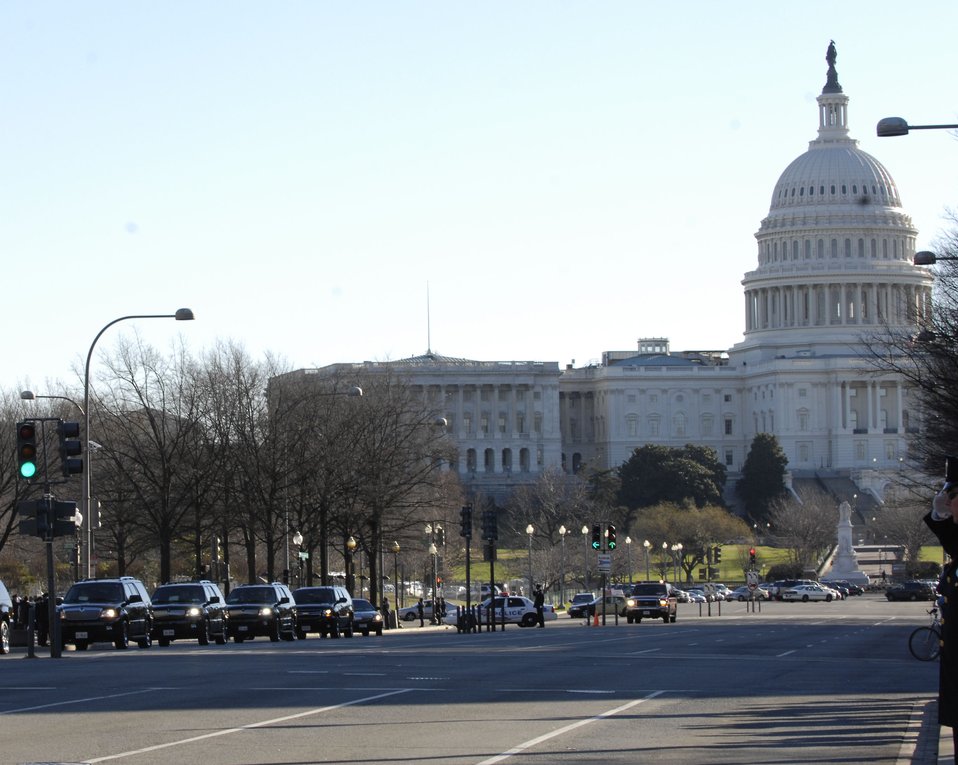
Honor Guard helps lay President Ford to rest

A funeral procession for former President Gerald R. Ford heads to the National Cathedral in Washington, D.C., following his departure from the U.S. Capitol on Jan. 2. The president's final resting place will be in his hometown of Grand Rapids, Mich., at a site just north of the Gerald R. Ford Museum.